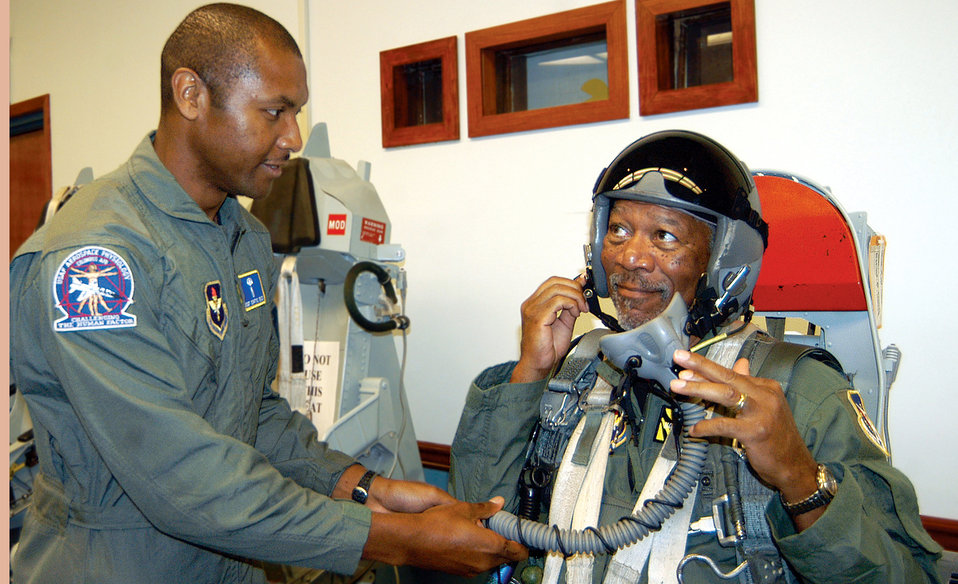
Freeman flies

COLUMBUS AIR FORCE BASE, Miss. -- Master Sgt. Curtis Chiles (left) conducts egress training for actor Morgan Freeman before his orientation flight in a T-37 Tweet here Aug. 12. Mr. Freeman, who starred in the 2002 movie